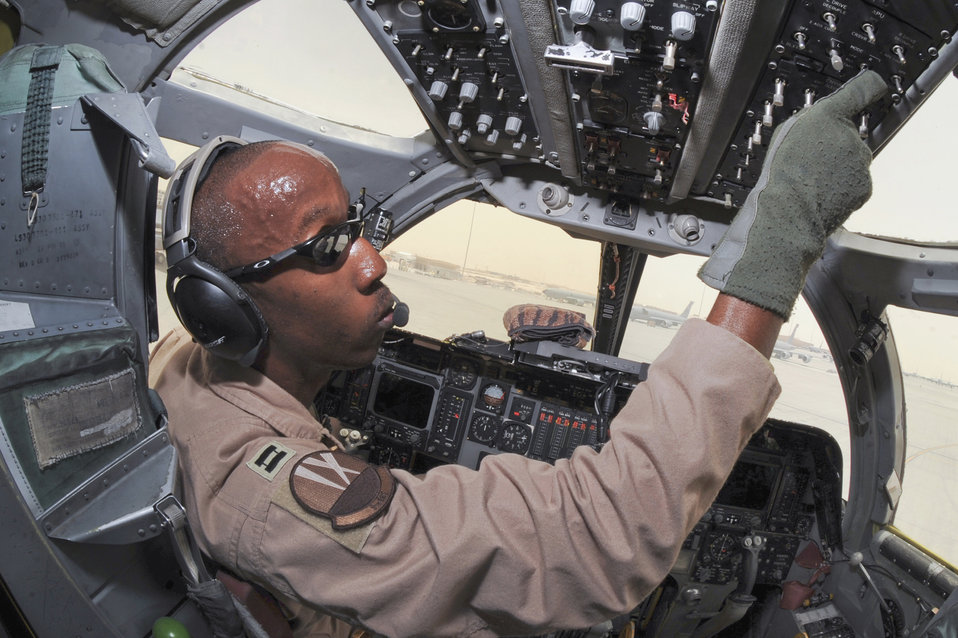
Check and re-check

Capt. Andre Walton runs a B1-B Lancer through its preflight checklist May 5 at an air base in Southwest Asia. The pilot performs preflight checks to ensure all systems are functioning before every mission. Captain Walton is assigned to the 9th Expeditionary Bomb Squadron, and is deployed from Dyess Air Force Base, Texas.